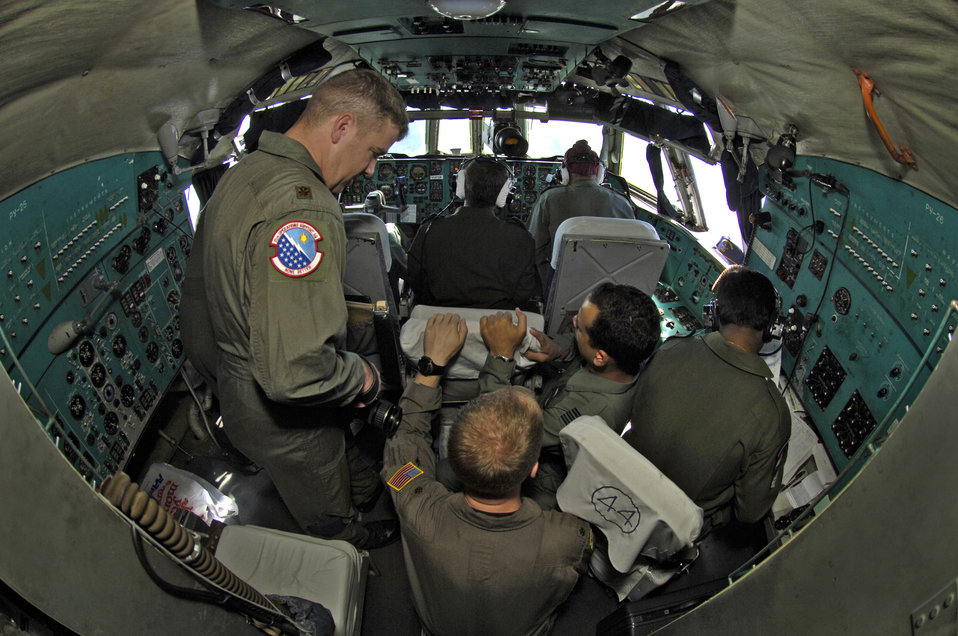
Airmen fly with Indian air force counterparts

Majors Latimer Neal and Halsey Burks from the 15th Airlift Wing at Hickam Air Force Base, Hawaii, get a briefing in the cockpit of a Indian IL-76 medium cargo aircraft during a training mission over the big island of Hawaii Sept. 20.